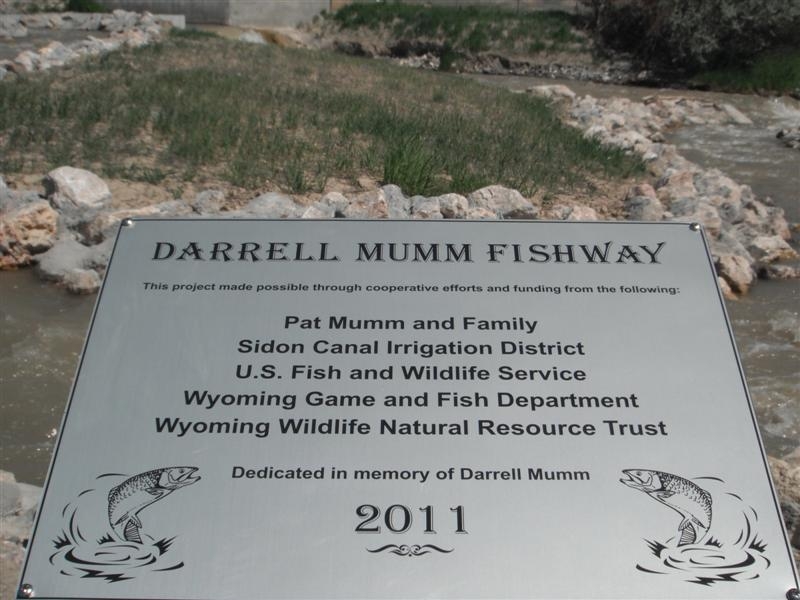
Dedication Sign

A small sign was erected at the site in the late Darrell Mumm's memory. The project was fittingly named the Darrell Mumm Fishway to honor the conservationist landowner who allowed the fishway's construction on his private property.